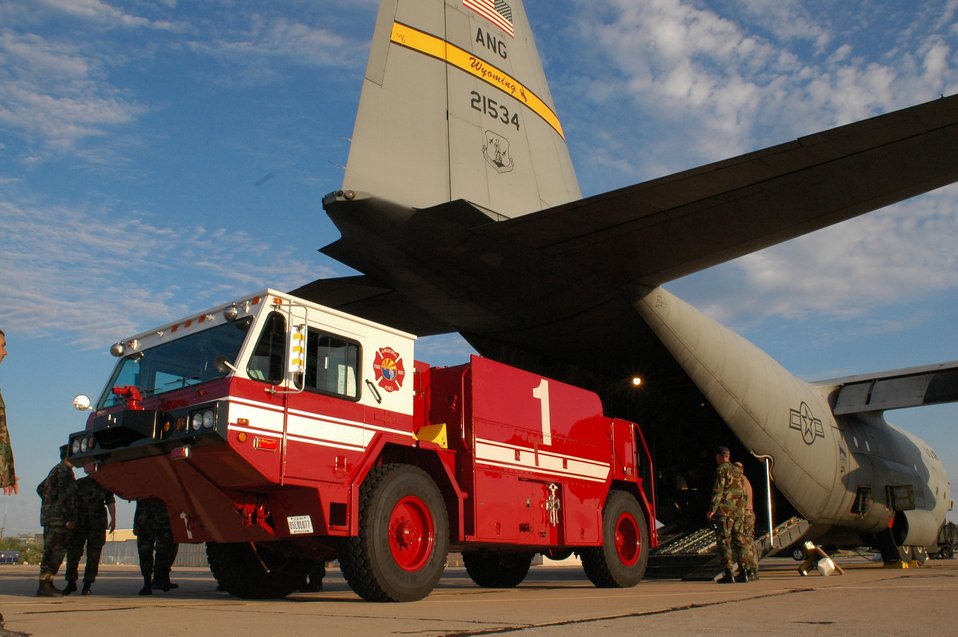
P-19

TUCSON, Ariz. -- A P-19 firetruck sits ready to be loaded on to a C-130 Hercules bound for Mississippi for Hurricane Katrina relief efforts on Sept. 9. The Airmen are from the Arizona Air National Guard's 162nd Fighter Wing in Tucson Ariz.